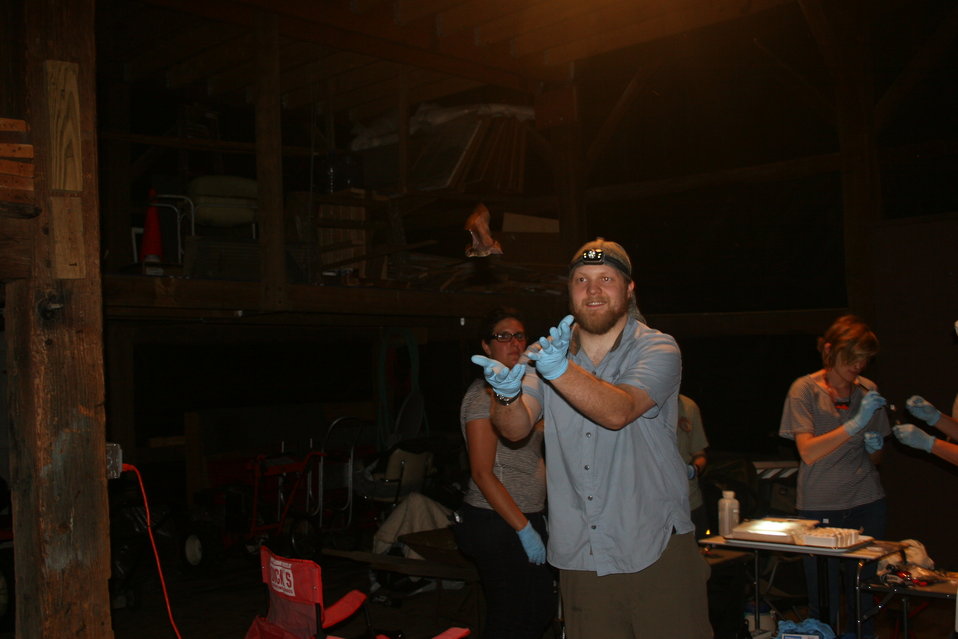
Releasing bat after banding and sampling.